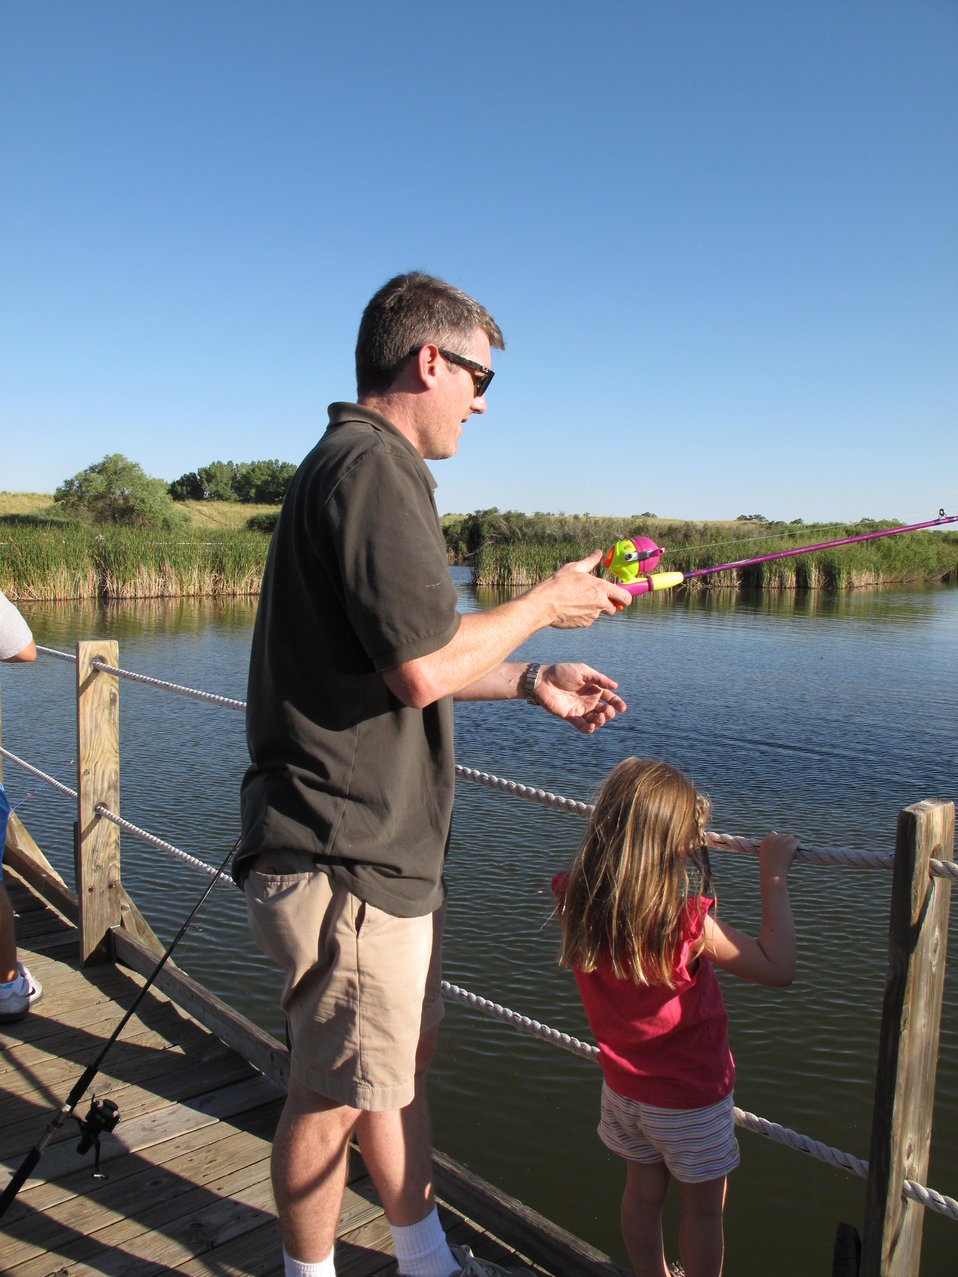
Father and Daughter Fishing

Fishing at the Rocky Mountain Arsenal.